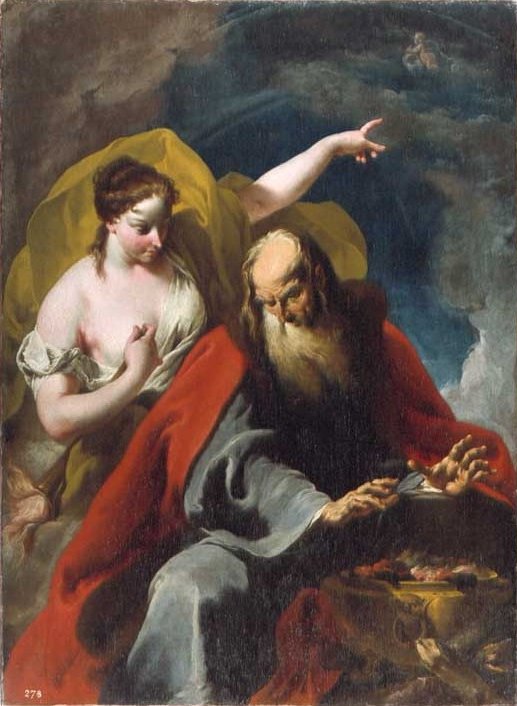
'Allegory of Summer and Winter' by Giovanni Battista Pittoni